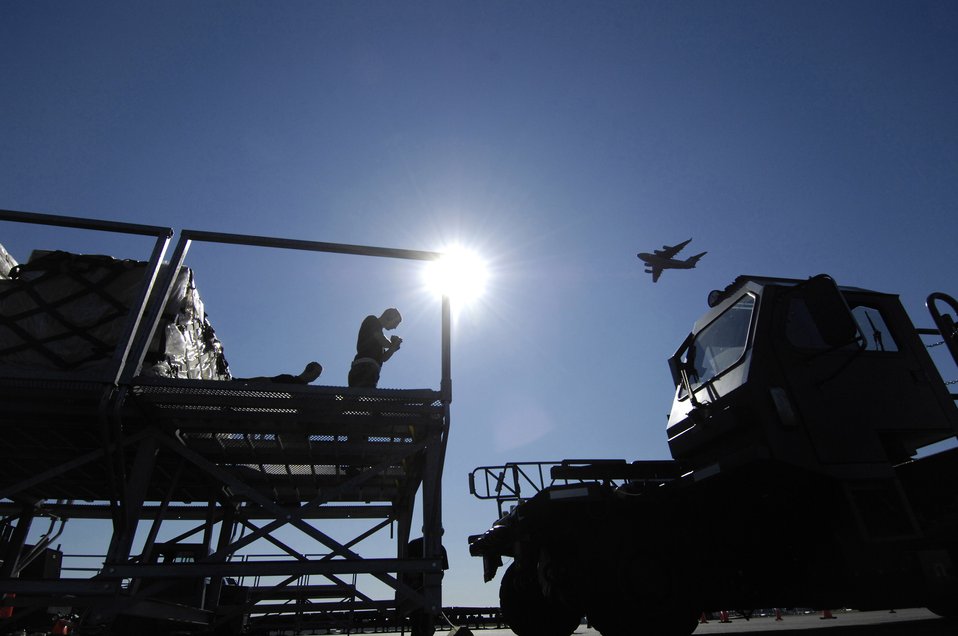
25K

Airmen from the 439th Air Wing at Westover Air Reserve Base, Mass., participate in the 25K Halvorsen Driving Course during Air Mobility Rodeo 2007 at McChord Air Force Base, Wash., July 25.